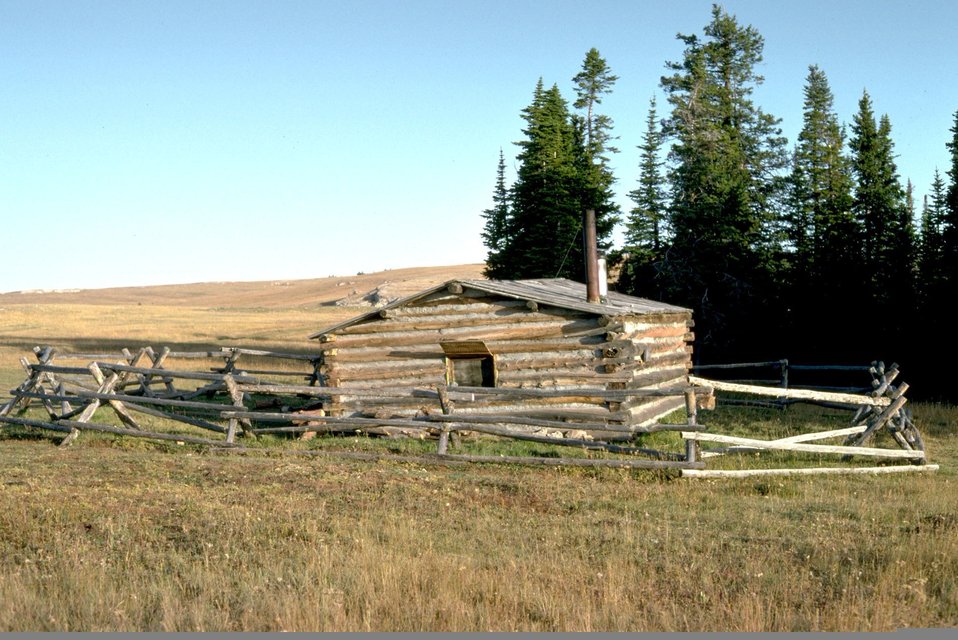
Penn's Cabin